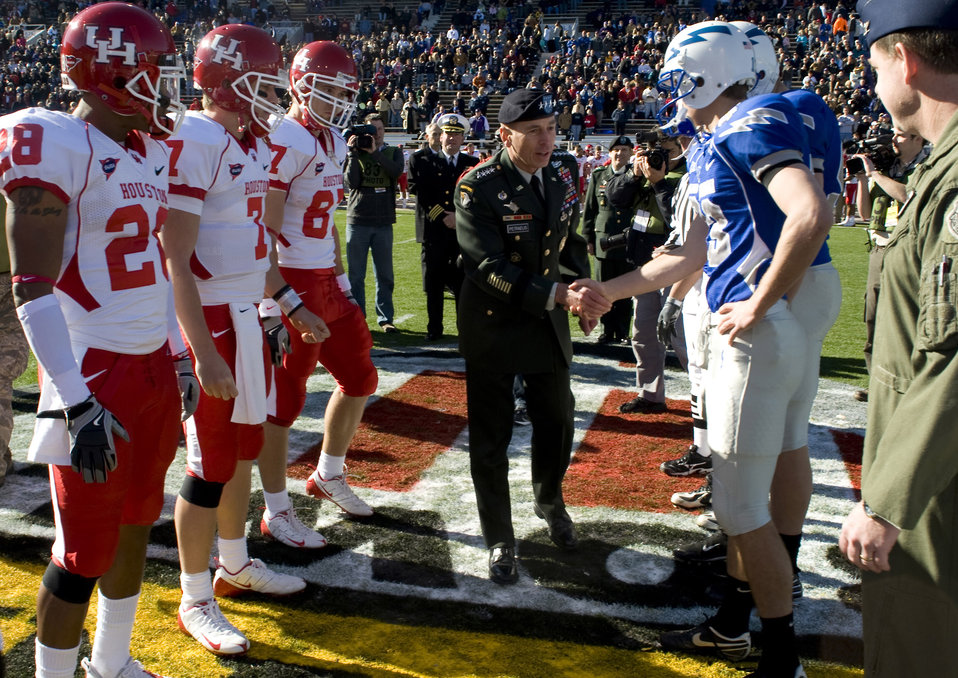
Armed Forces Bowl

Army Gen. David Petraeus shakes hands with football players from the U.S. Air Force Academy and the University of Houston prior to the coin toss Dec. 31 at the sixth annual Bell Helicopter Armed Forces Bowl in Fort Worth, Texas. General Petraeus, U.S. Central Command commander, performed the coin toss and was honored during the game's half-time event.